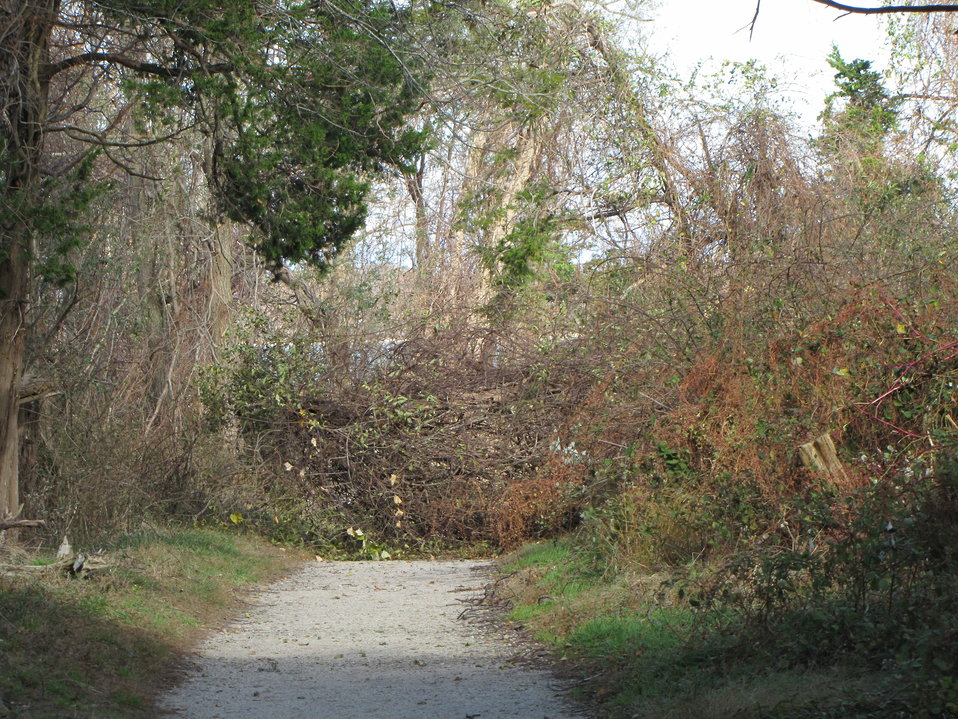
Debris blocking beach trail at Elizabeth A. Morton National Wildlife Refuge

Beach trail inaccessible after the storm at Elizabeth A. Morton National Wildlife Refuge, part of the Long Island National Wildlife Refuge Complex.